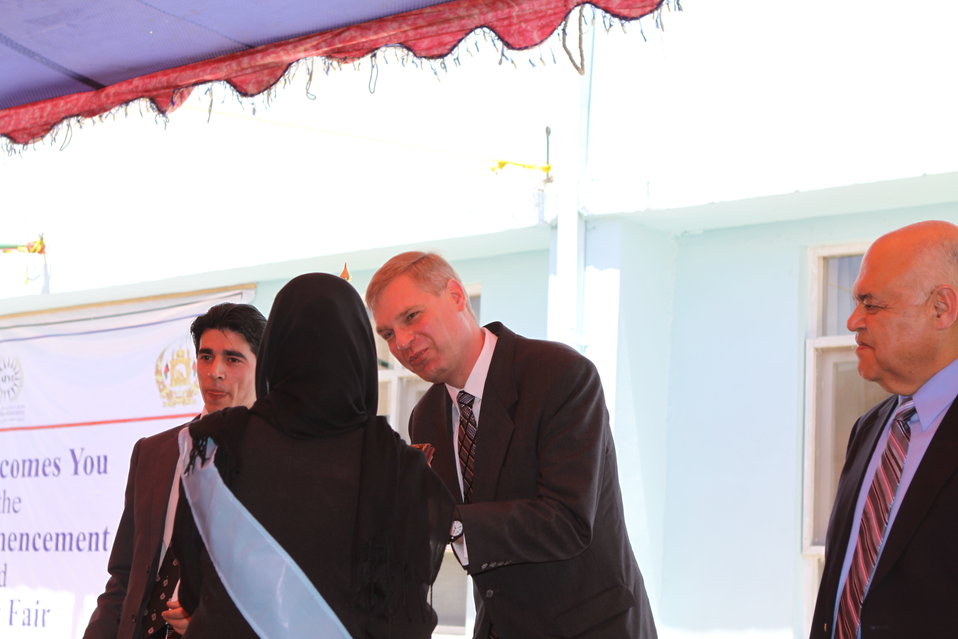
100522 ATVI Graduation 121